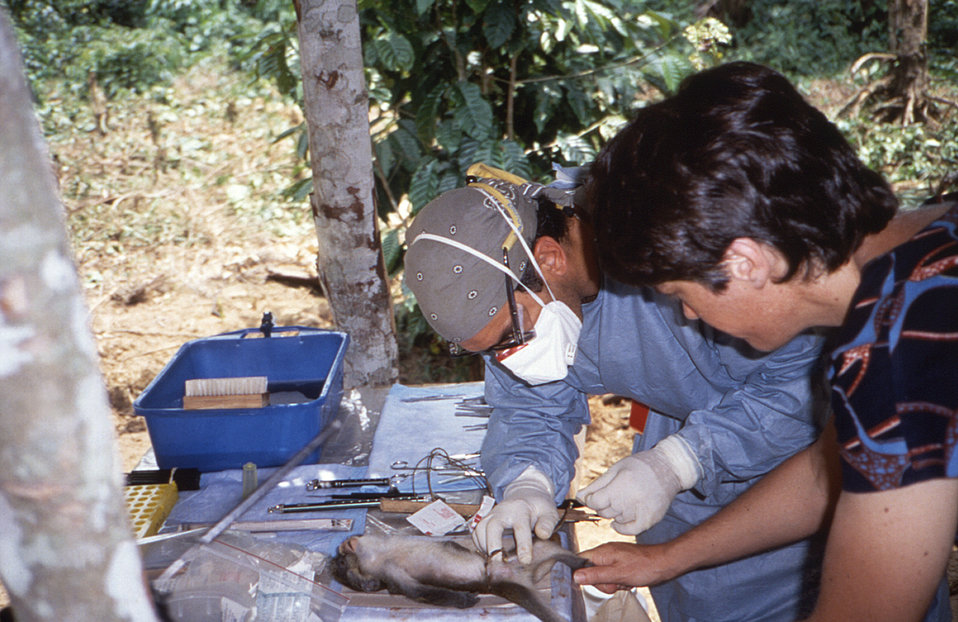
This image was created during an investigation into an outbreak of monkeypox, which took place in the Democratic Republic of the Congo (DRC), 1996 to 1997, formerly Zaire. In this particular view, R. Joel Williams, D.V.M, and American zoologist, Delphi Messinger were examining what appeared to be a primate, which was one of the suspected sources of this zoonotic infection.